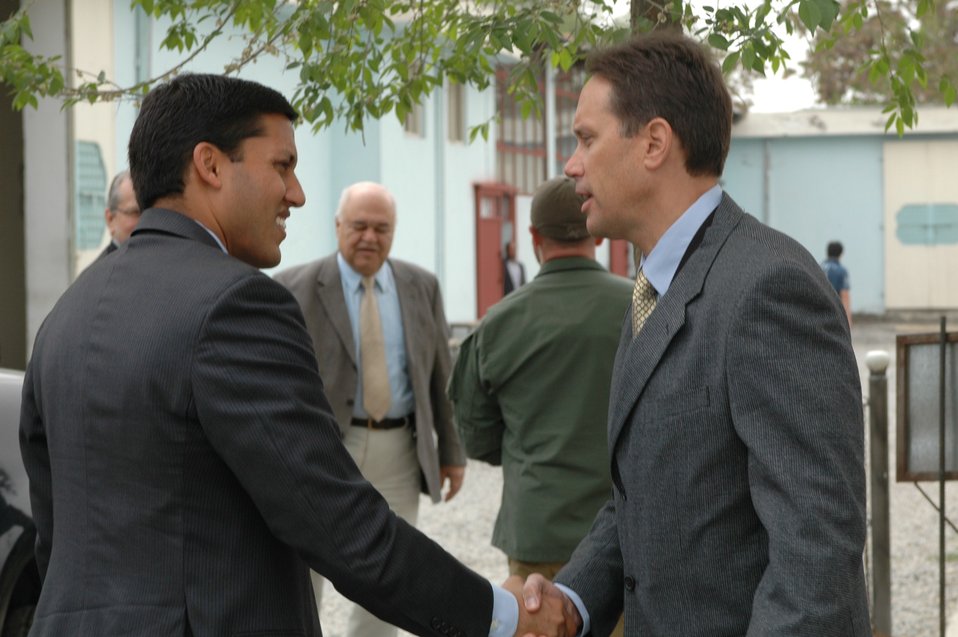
Dr Shah Visits Votech in Kabul